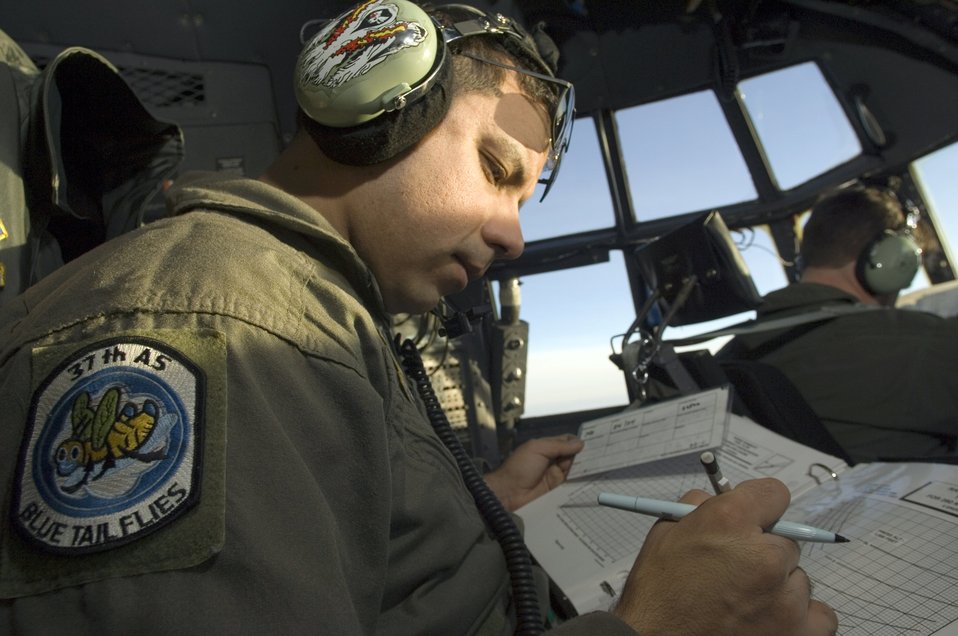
Mission time

OVER GERMANY (AFPN) -- Staff Sgt. Edward Fry works in cockpit of a C-130 Hercules flying above a cold front pushing through Germany. Sergeant Fry is a flight engineer with the 37th Airlift Squadron at Ramstein Air Base, Germany.